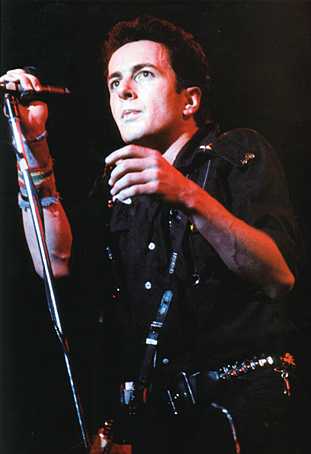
joe strummer singing